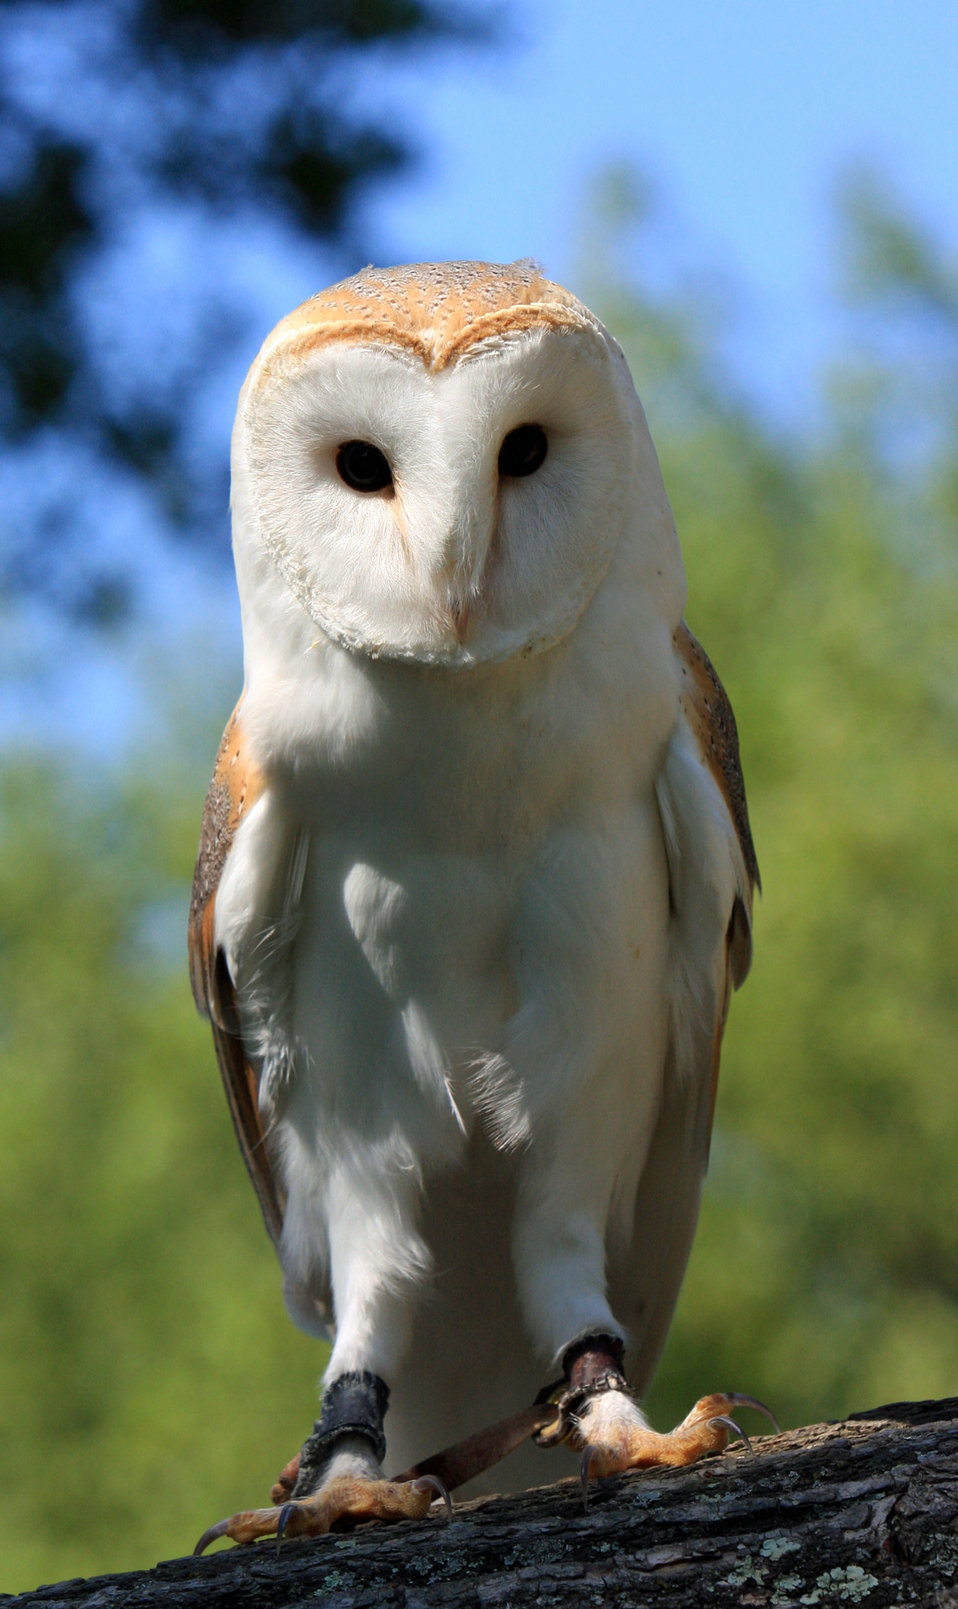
Barn owl portrait close-up

Close-up portrait of a beautiful barn own bird against blue sky photo.